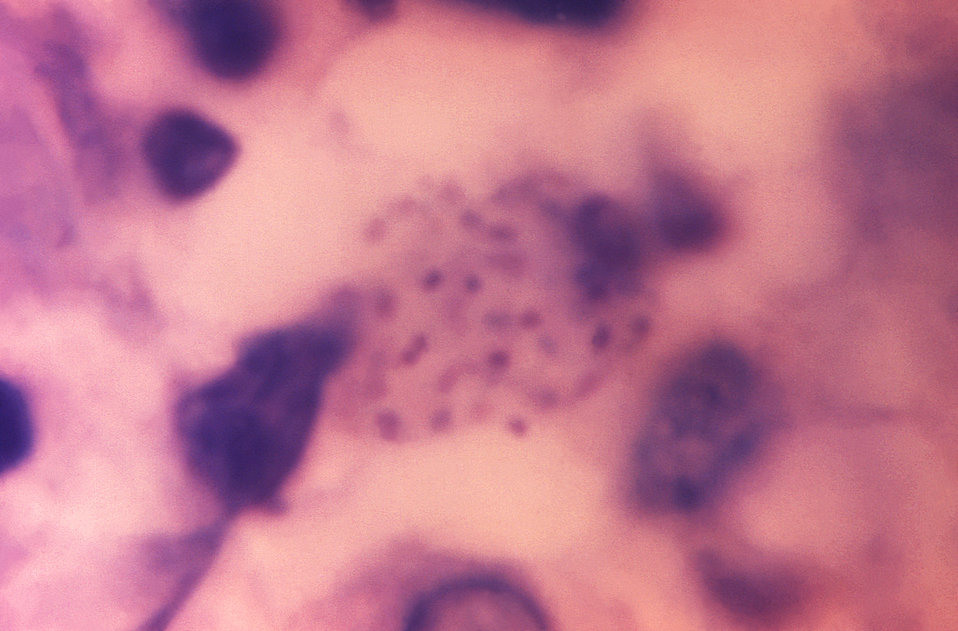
This micrograph reveals the presence of Donovan bodies, or cellular inclusions confirming the diagnosis of granuloma inguinale.